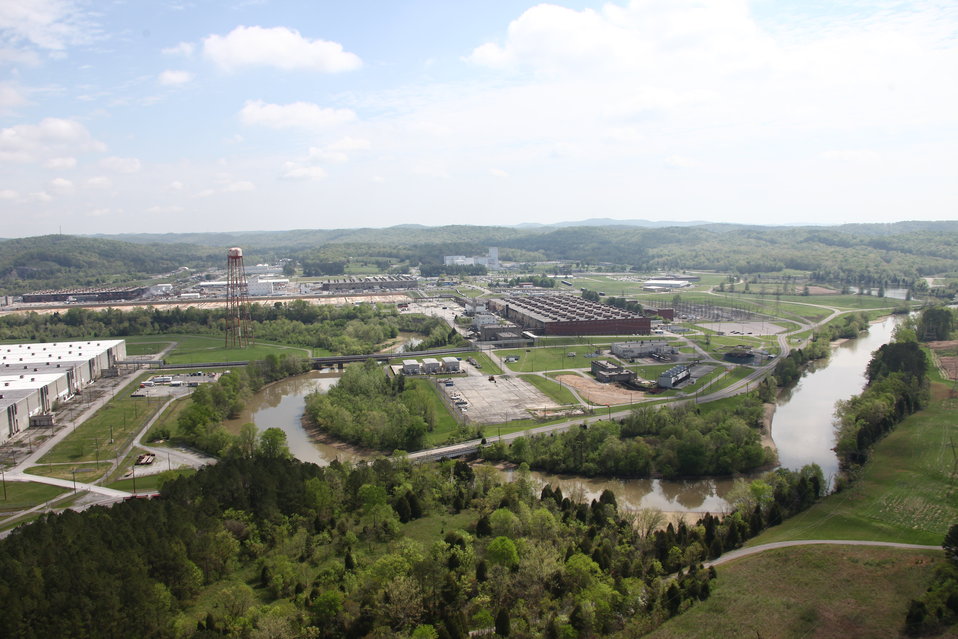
ETTP